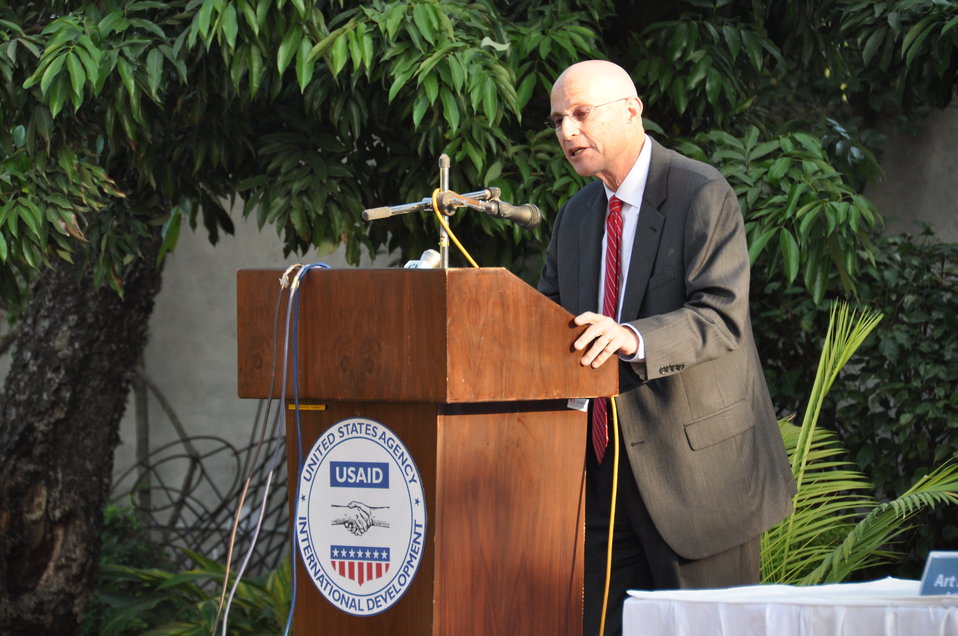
United States Government Strengthens PESCO Field Operations 11